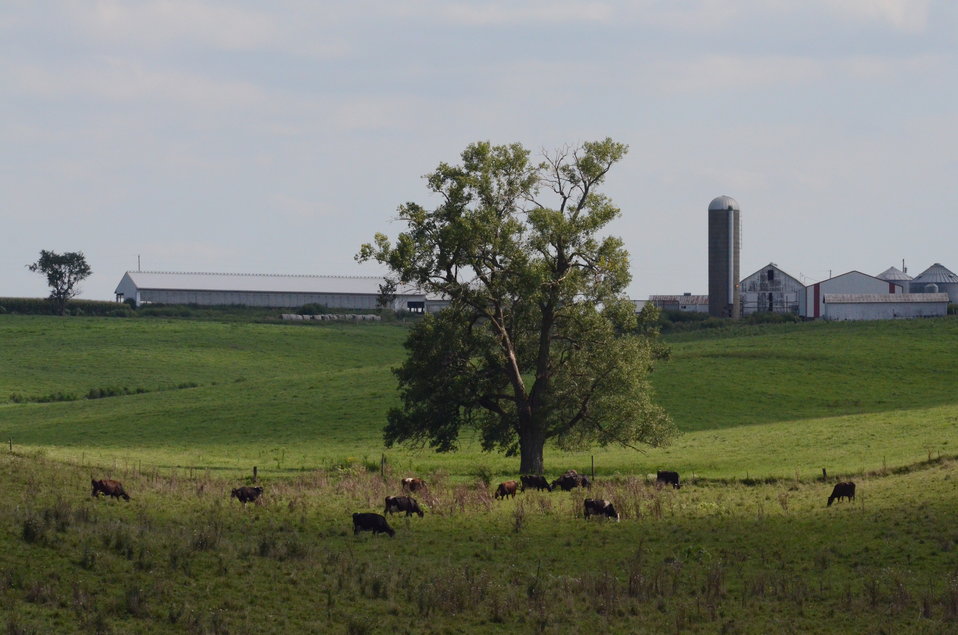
Dairy Farm near Poesta, IA, on Tuesday, Aug. 16, 2011.